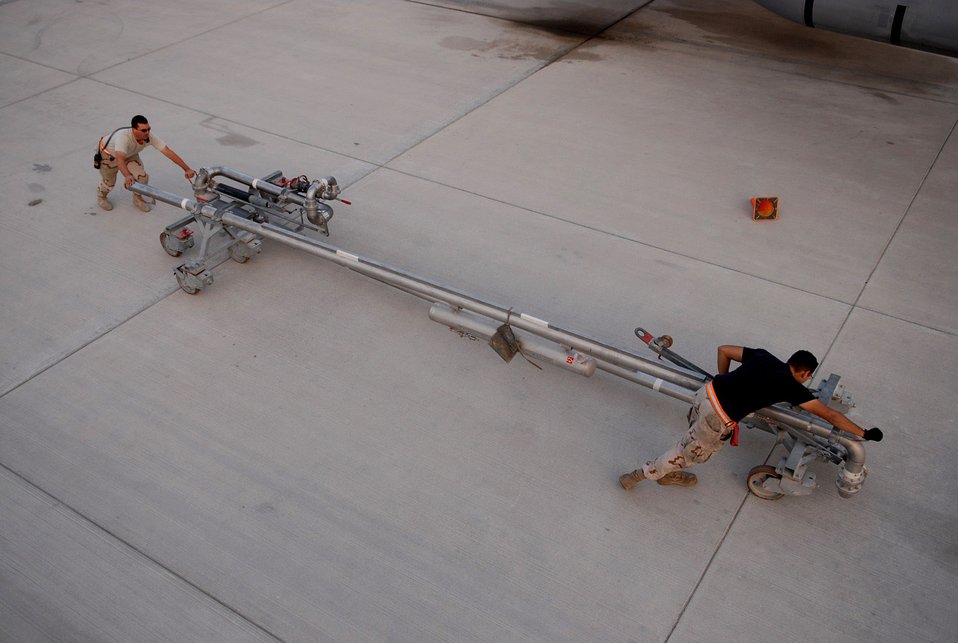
It's a gas

Staff Sgt. Brian McCaslin (left) and Staff Sgt. Ruben Mariscal recover a pipe system, known as a pantograph, after refueling a KC-135 Stratotanker Jan. 5 at a Southwest Asia air base. Sergeant McCaslin is with the 379th Expeditionary Logistics Readiness Squadron and Sergeant Mariscal is with the 379th Expeditionary Aircraft Maintenance Squadron.